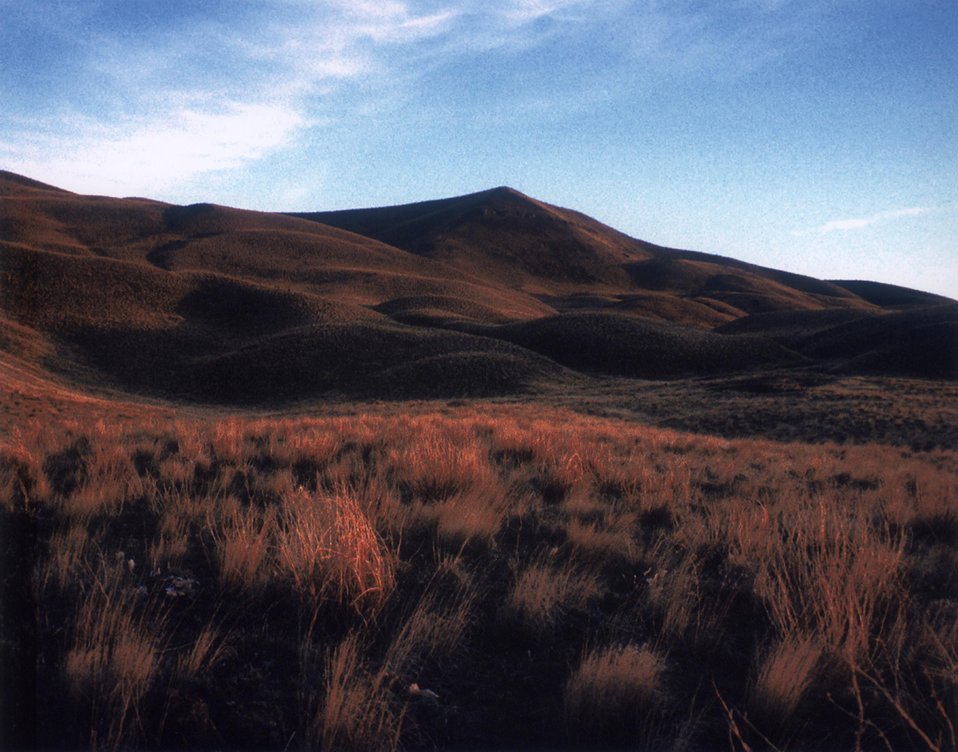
A half moon can be seen over the mountains in the area of the Hanford Site.